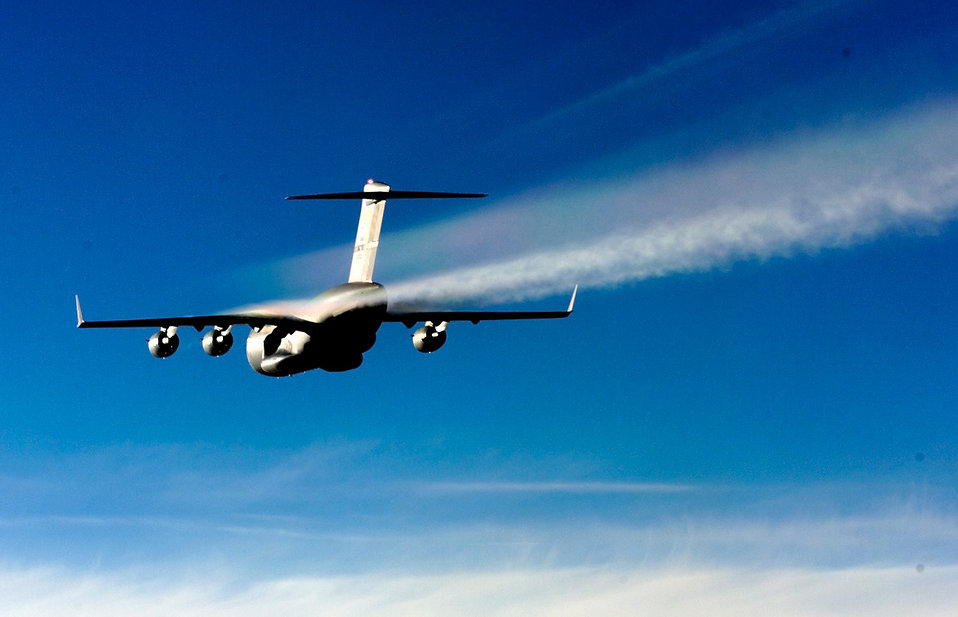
Peace Shield

OVER THE ATLANTIC OCEAN -- A C-17 Globemaster III from the 437th Airlift Wing, Charleston Air Force Base, S.C., flys to the Ukraine loaded with 82nd Airborn Division Paratroopers July 16, 2000. Paratroopers are jumping in the Ukraine to support the exercise Peace Shield 2000. Peace Shield is a Joint Peace Keeping exercise involving 22 different countries.